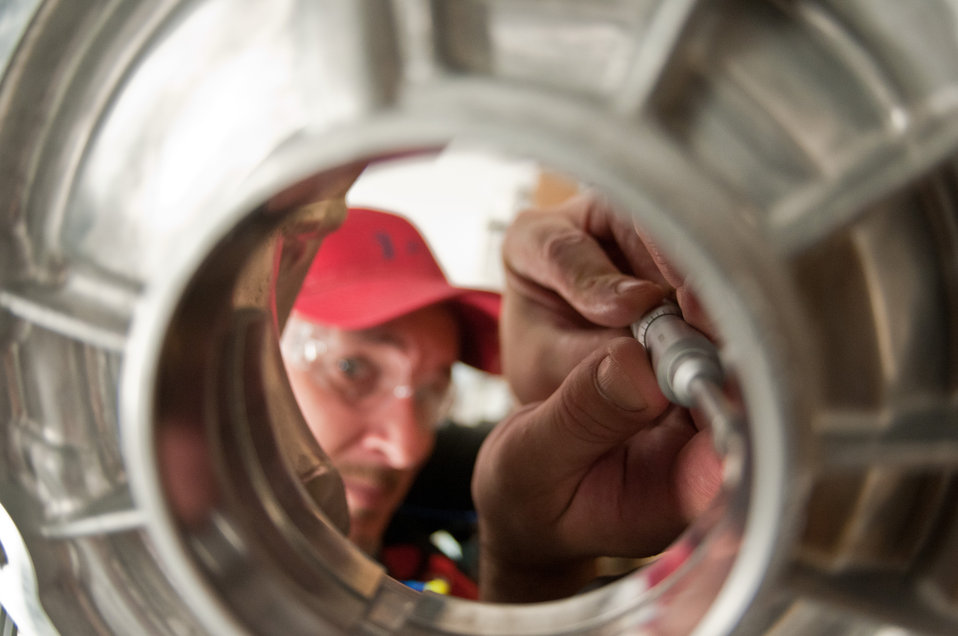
Quality Control Specialist Tim Russell uses a specialized micrometer to measure of machining performed at Port City Group’s Port City Castings Corporation manufactures high-pressure aluminum die-castings, mostly for the automotive industry, in Muskegon, MI, facility on Wednesday July 20, 2011. Port City Group boosted its employment by 12 percent over last year thanks to two Rural Business Guaranteed Loans totaling $9.6 million. In its 80,000 sq. ft. facility, machines that range from 800 – 1,600 tons, and cast A380 aluminum alloy products from melted ingots of aluminum, into automotive components of U.S.A. made vehicles. The process features a variety of robotic presses; computer controlled machining; quality control facility; and complete measurement and testing laboratory. In 2009 banks were backing out of loans for PCG equipment purchase agreements. The U.S. Department of Agriculture (USDA) loan guarantee helped make the loan possible with its guarantee. PCG obtained the needed robotic and other equipment. This resulted in a stable workforce that has since grown. When asked about their USDA experience, Port City Group Sales Manager Laura LaGuire said, “It was great! They were very helpful. Everything that came up was handled smoothly, the money came in place when it was needed, and it was a very smooth transition.”